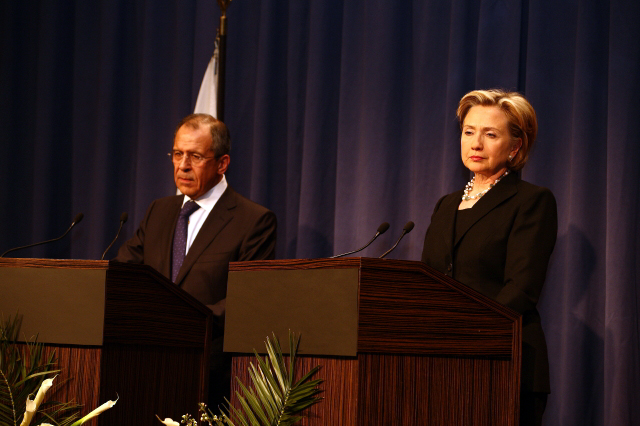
Press Conference With Russian Foreign Minister

Press conference after dinner meeting between U.S. Secretary of State Hillary Rodham Clinton and Russian Foreign Minister Sergey Lavrov in Geneva, Switzerland March 6, 2009.